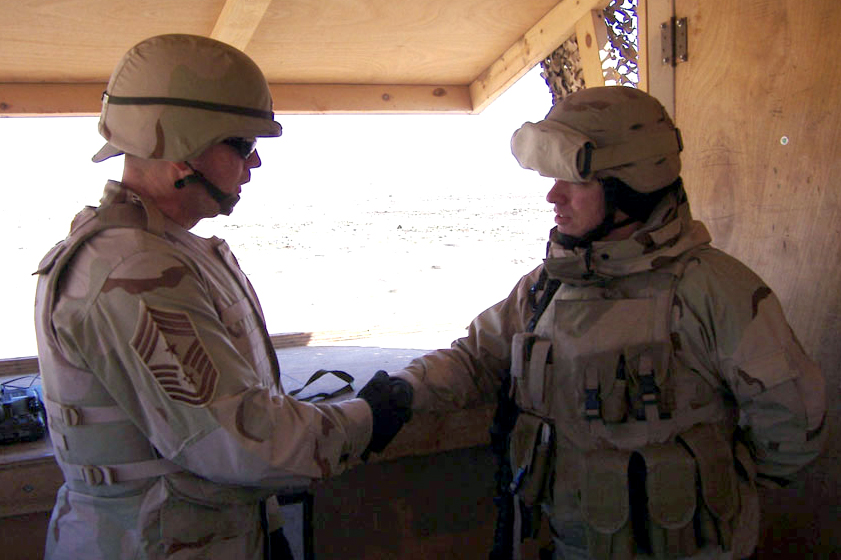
ACC chief visits troops

SOUTHWEST ASIA (AFPN) -- Command Chief Master Sgt. David Popp of Air Combat Command meets an Airman during his recent visit to several deployed locations here. The No. 1 reason for his visit was ensuring the troops had been properly trained and equipped before deploying.